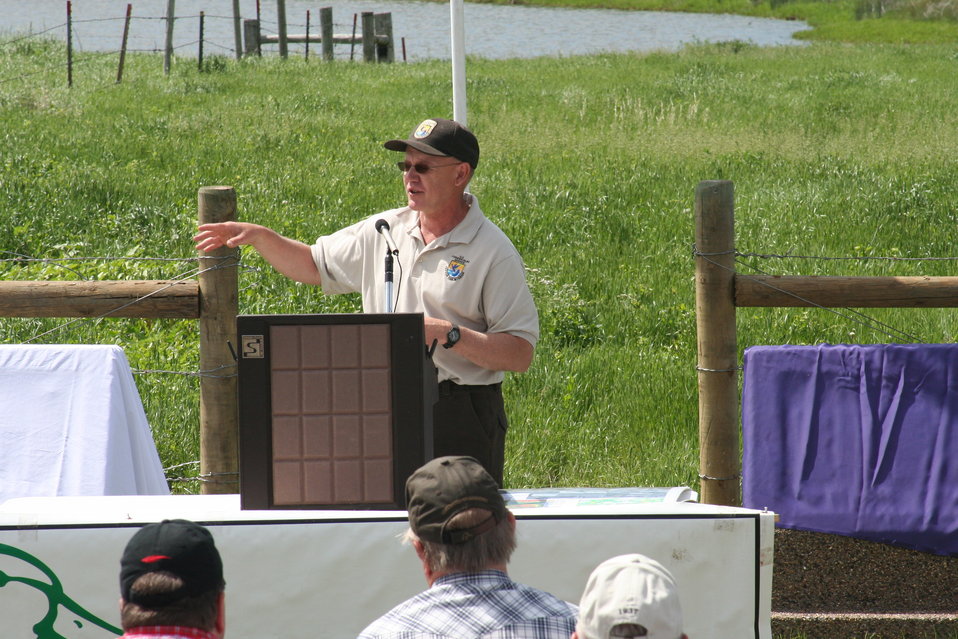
2013 Green Wing Dedication

Project Leader Clarke Dirks speaking with attendees.